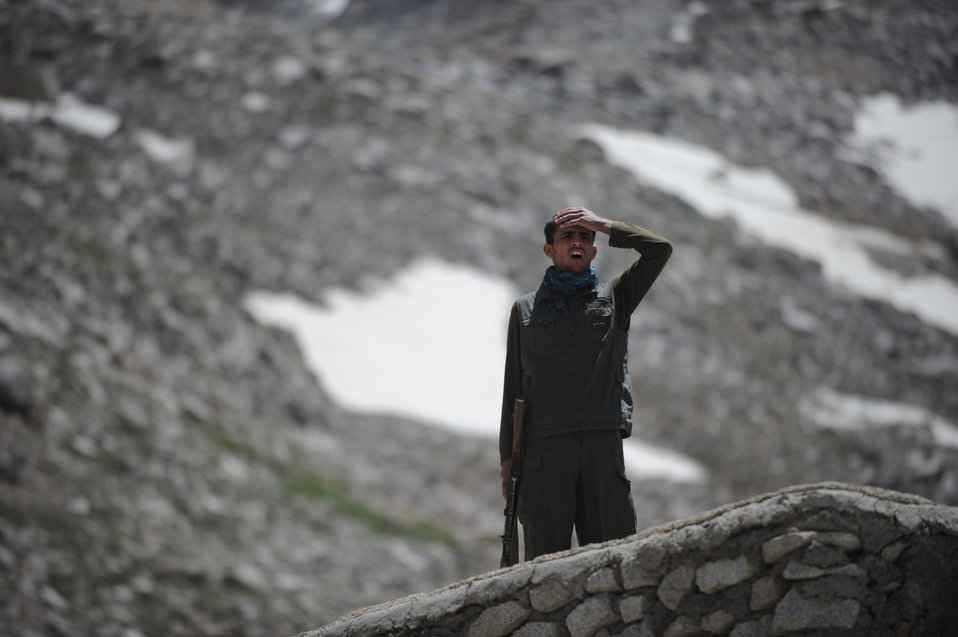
Security at the North entrance of the Salang Tunnel on the border of Parwan and Baghlan Provinces, Afghanistan, on Wednesday, June 15, 2011. (S.K.Vemmer/Department of State)